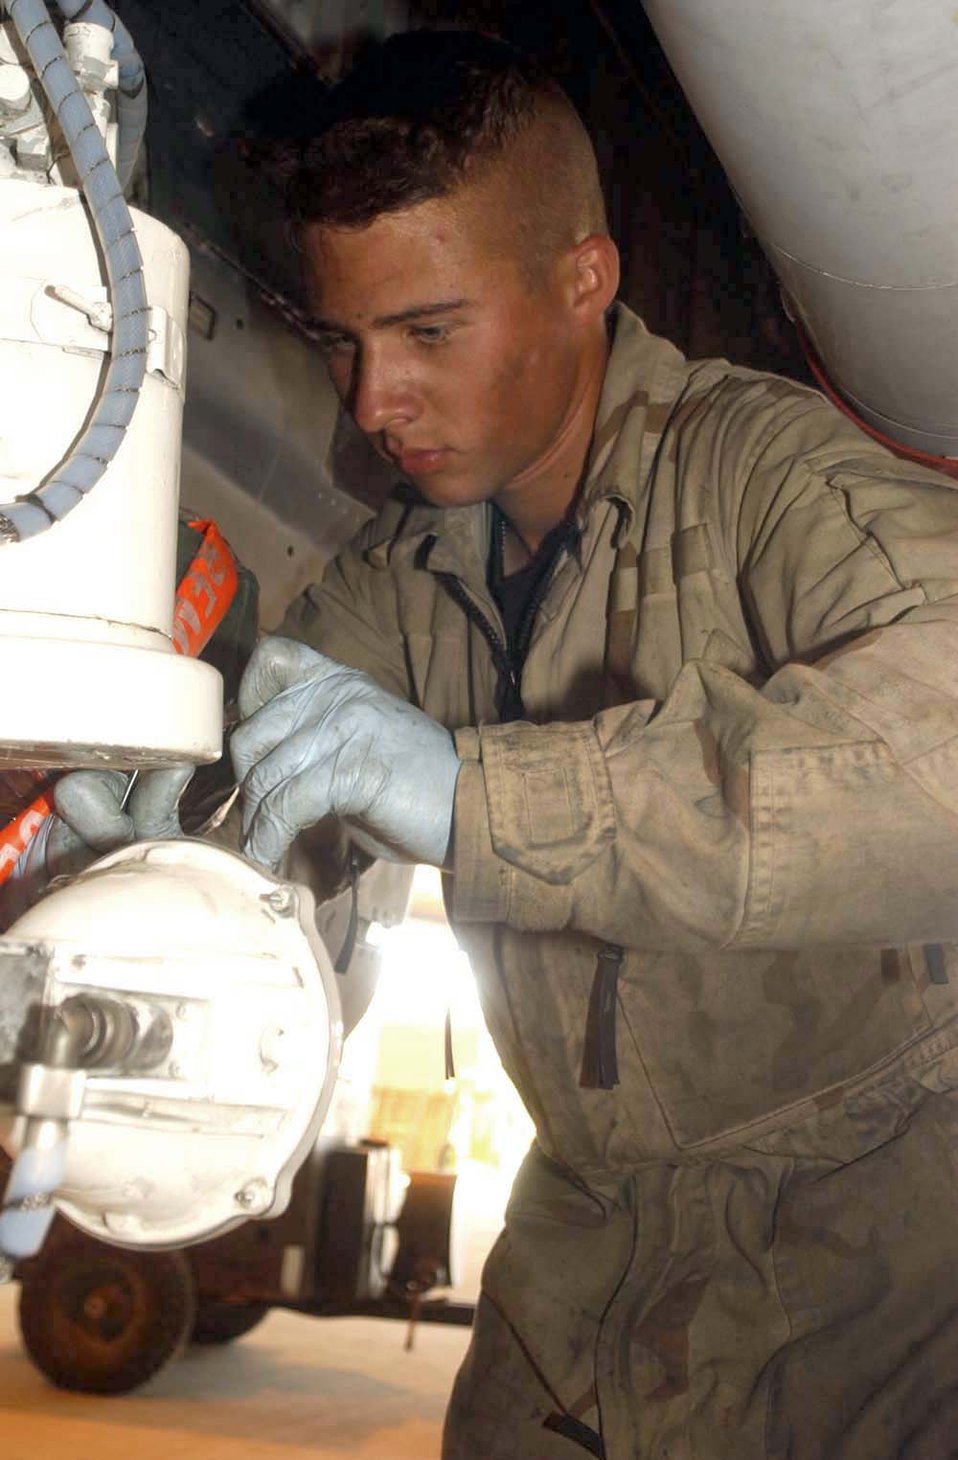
Phase maintenance

BAGRAM AIR BASE Afghanistan -- Senior Airman Shane Neel installs a nose wheel steering cover on an A-10 Thunderbolt II. He is an aircraft maintenance journeyman with the 455th Expeditionary Aircraft Maintenance Squadron.